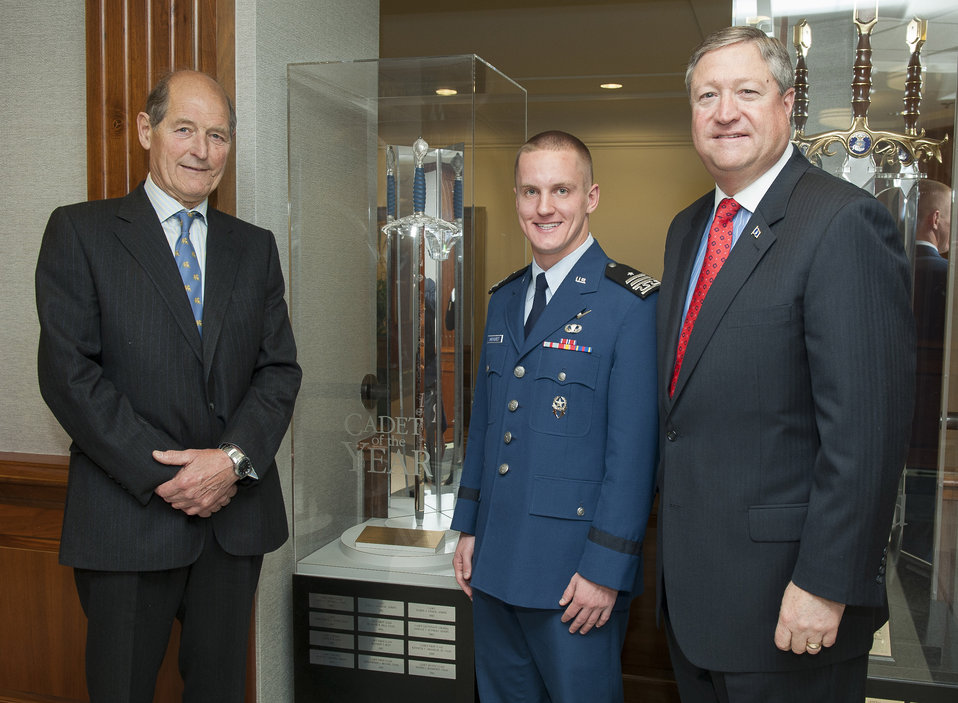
USAFA cadet honored as Cadet of the Year

Secretary of the Air Force Michael Donley (right), Air Force Academy Cadet 1st Class Dustin Hayhurst (center) and David Cyster stand beside the Millennium Sword of Friendship May 10, 2012, in the Pentagon, Washington, D.C. Donley then presented the 2011 U.S. Air Force Cadet of the Year Award to Hayhurst, and Cyster presented Hayhurst a coin symbolizing presentation of the Sword to him in honor of being named the Cadet of the Year. Hayhurst earned the award by demonstrating excellence in military skills, academics and athletics in an Air Force commissioning program. Cyster is a member of the of the Air Squadron of the United Kingdom.